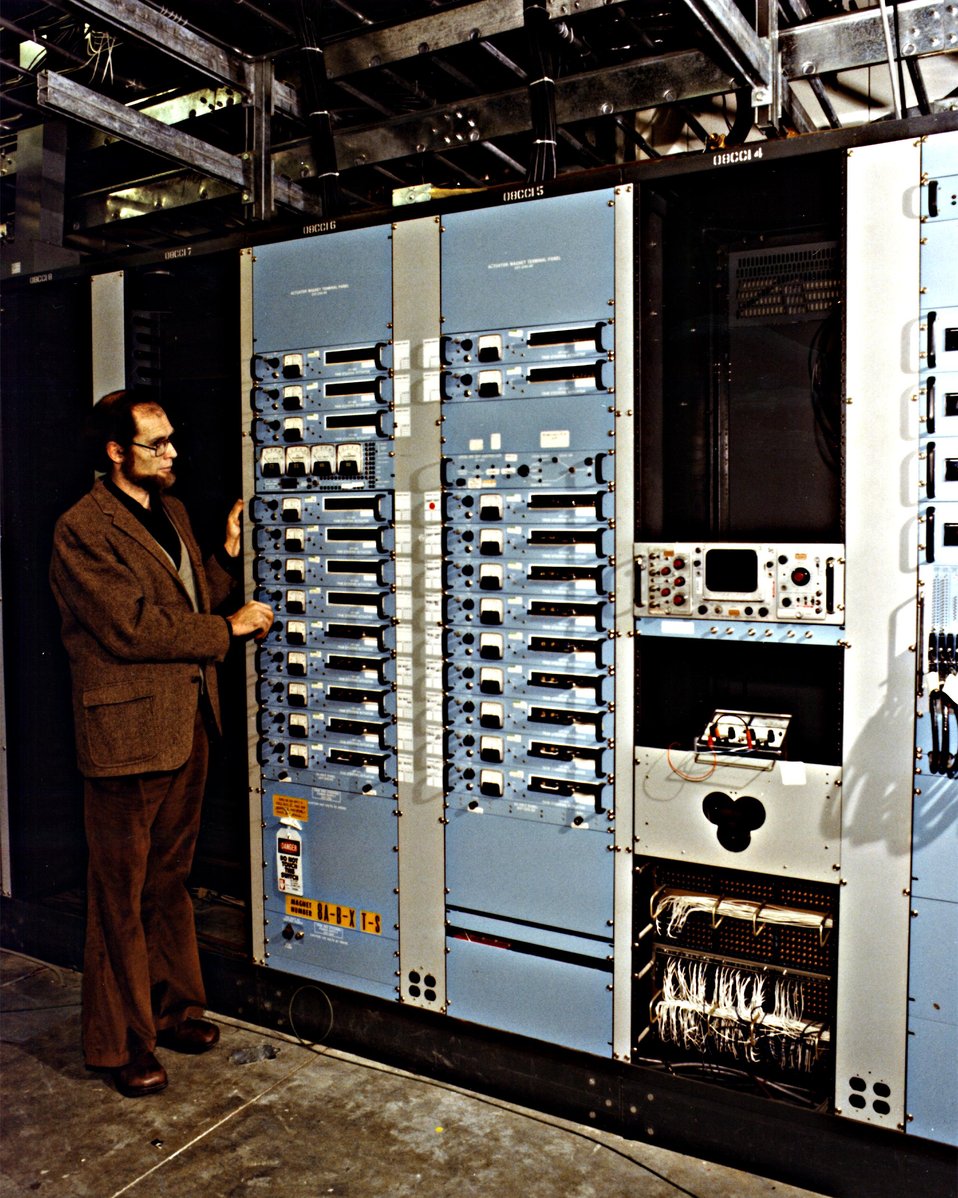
SCIENTIST STANDING BESIDE THE POWER SUPPLY FOR PEP'S TRIM & STARING MAGNETS.

THE POSITRON-ELECTRON PROJECT (PEP) IS A JOINT UNDERTAKING OF STANFORD LINEAR ACCELERATOR CENTER (SLAC) AND THE LAWRENCE BERKELEY LABORATORY (LBL). THE PEP MACHINE IS DESIGNED TO STORE BEAMS OF ELECTRONS AND POSITRONS CIRCULATING IN OPPOSITE DIRECTIONS AT SINGLE-BEAM ENERGIES BETWEEN 4 GEV AND 18 GEV. THE SOURCE OF THE BEAMS WILL BE THE PRESENT SLAC ACCELERATOR. THE COUNTER-ROTATING BEAMS OF ELECTRONS AND POSITRONS WILL COLLIDE WITH EACH OTHER AT SIX POINTS IN THE MACHINE. THESE COLLISION OR BEAM-INTERACTION POINTS WILL BE USED FOR HIGH-ENERGY PHYSICS EXPERIMENTS.